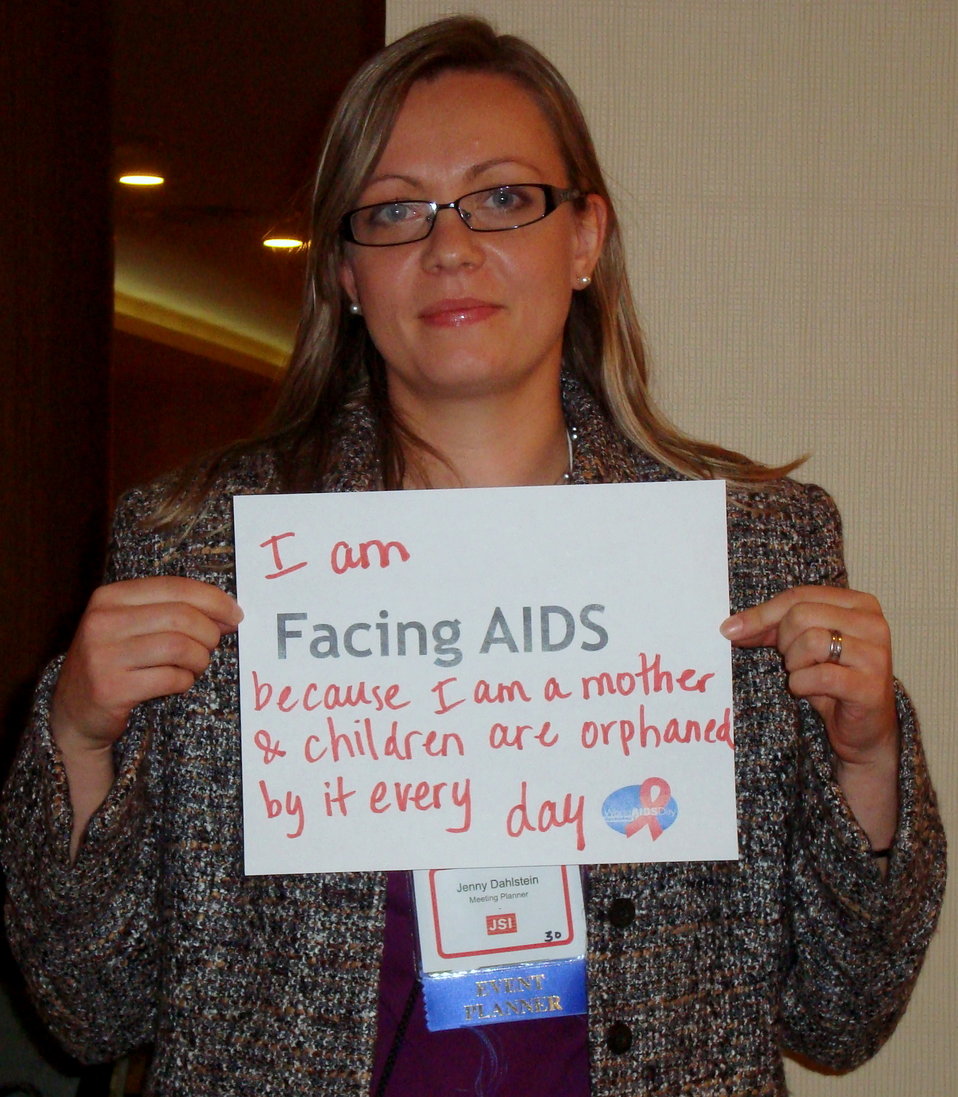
FacingAIDSCampaign 030